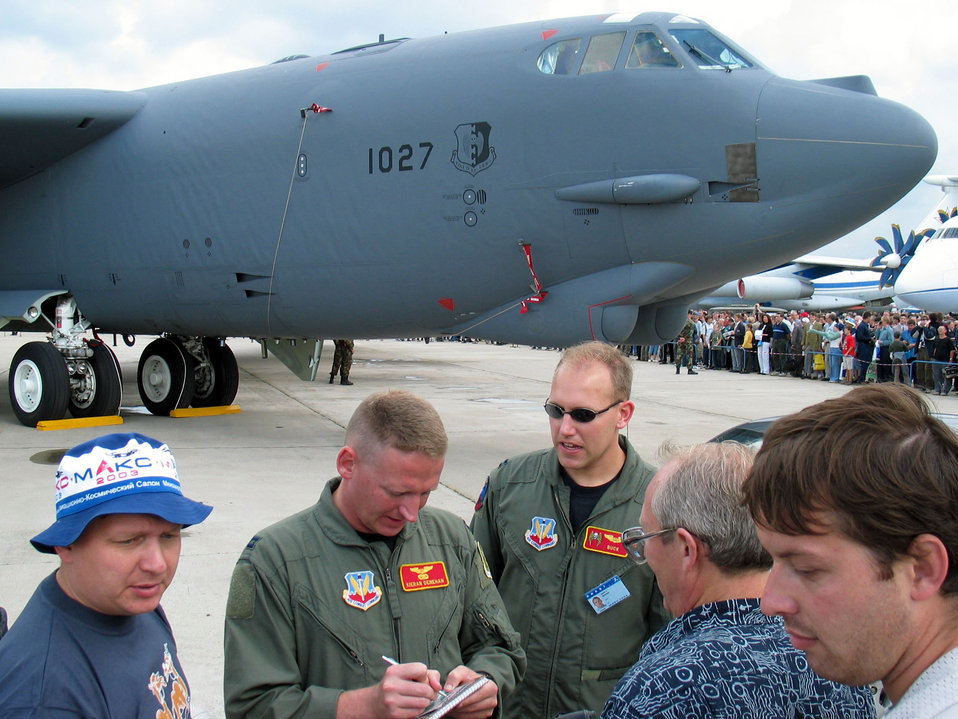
Runway stars

ZHUKOVSKY AIRFIELD, Russia -- Capts. Kieran Denehan (left) and Gary Berger sign autographs at the Moscow Aviation and Space Show on Aug. 22. They are B-52 Stratofortress crew members from Minot Air Force Base, N.D. This is the first time U.S. military aircraft have been on public display in Russia. Four other U.S. military aircraft are on display here: an F-16 Fighting Falcon, an F-15E Strike Eagle, a C-130 Hercules and a KC-135 Stratotanker. Also, an F-15 Eagle performs a daily aerial demonstration. The show ends Aug. 24.